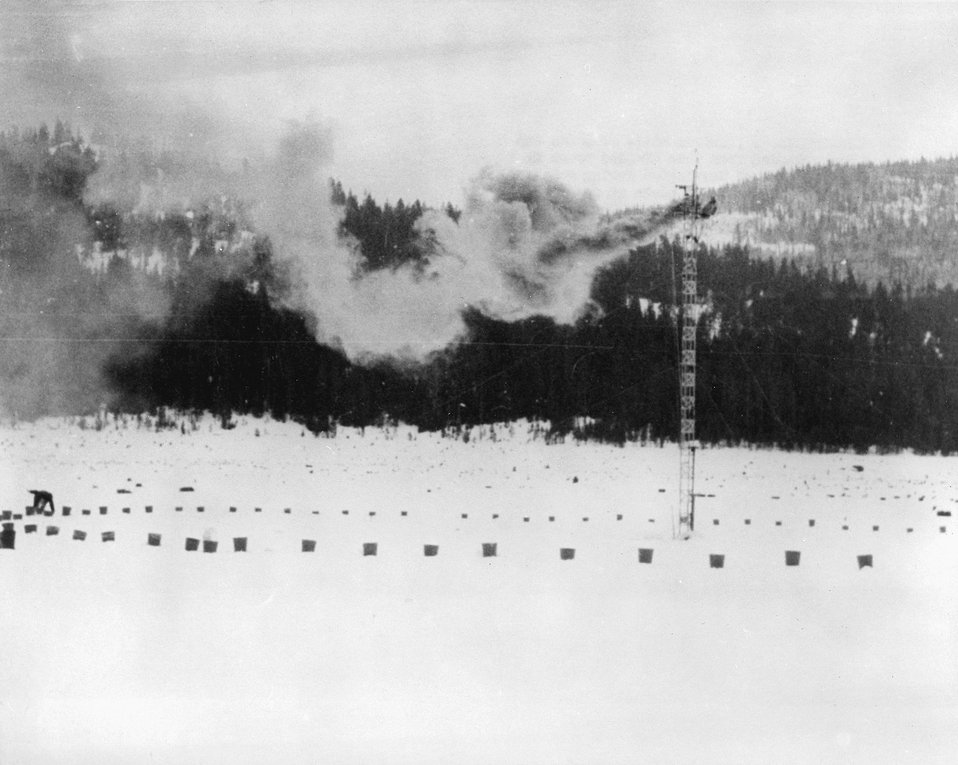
Various kinds of gases and particles are released from this 40-foot tower in the Cascade Mountains of Washington During rain and snowstorms. c. 1968